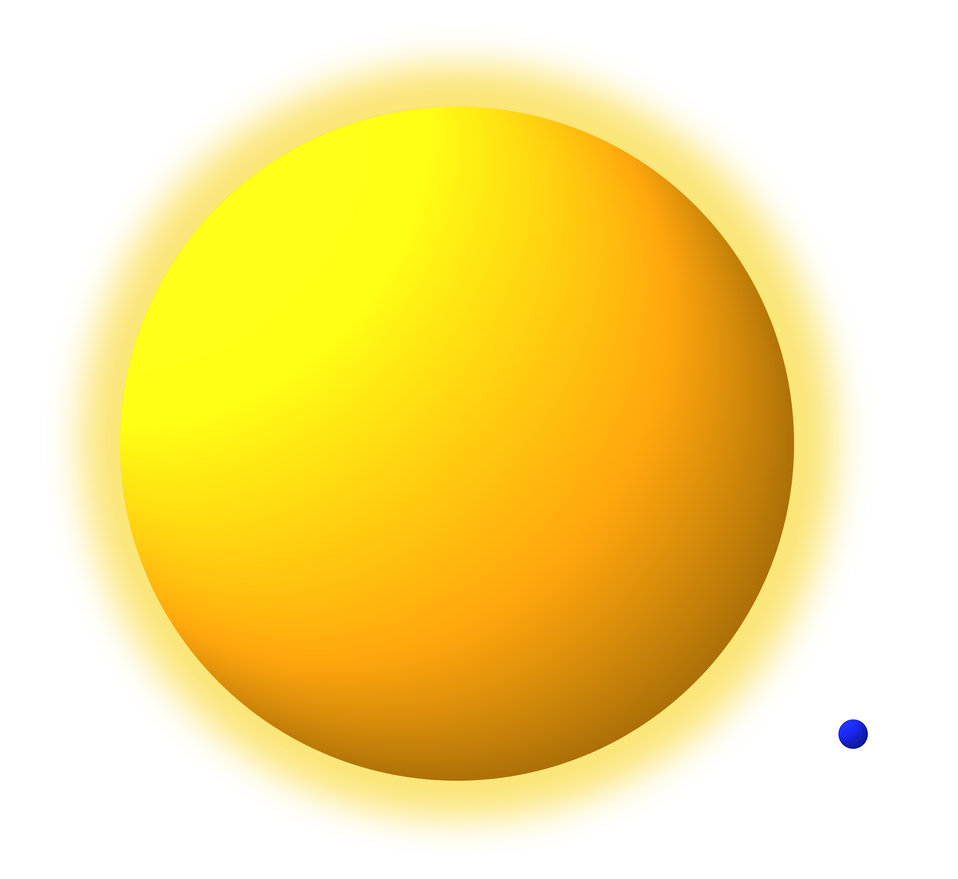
Sodium Alternative

Sodium-like tungsten ions (blue) are far smaller than neutral sodium atoms (orange) the ion's 11 electrons are pulled in very tightly by the 74 protons in the tungsten nucleus, making their energy jumps far more expensive than in neutral sodium and causing them to emit high-energy ultraviolet wavelengths of light, rather than visible light, as is the case with ordinary sodium.